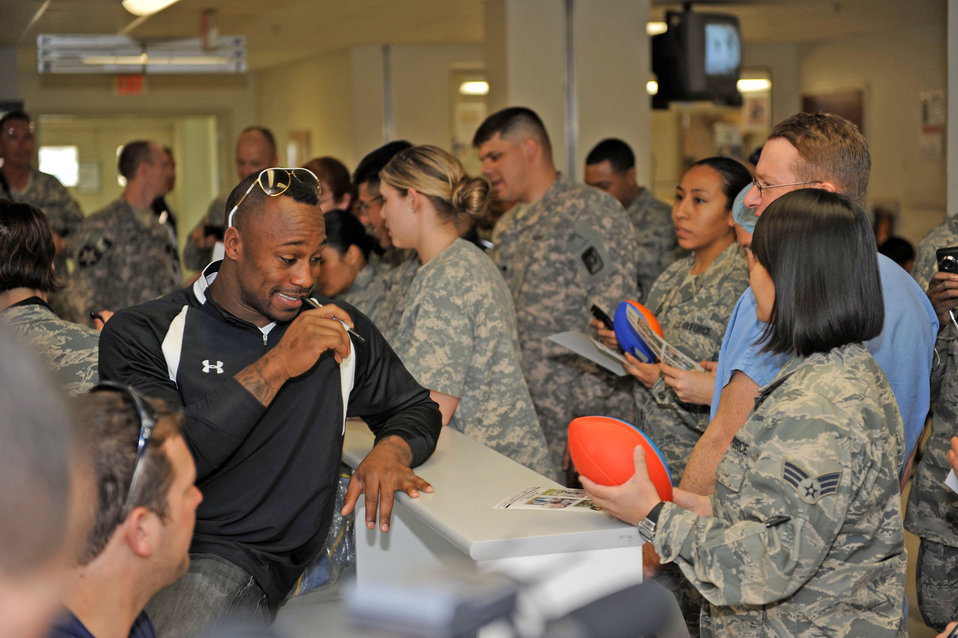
NFL players visit Bagram Airmen

Vernon Davis of the San Francisco 49ers signs autographs for servicemembers March 5, 2010at the Craig Joint Theater Hospital at Bagram Airfield, Afghanistan.